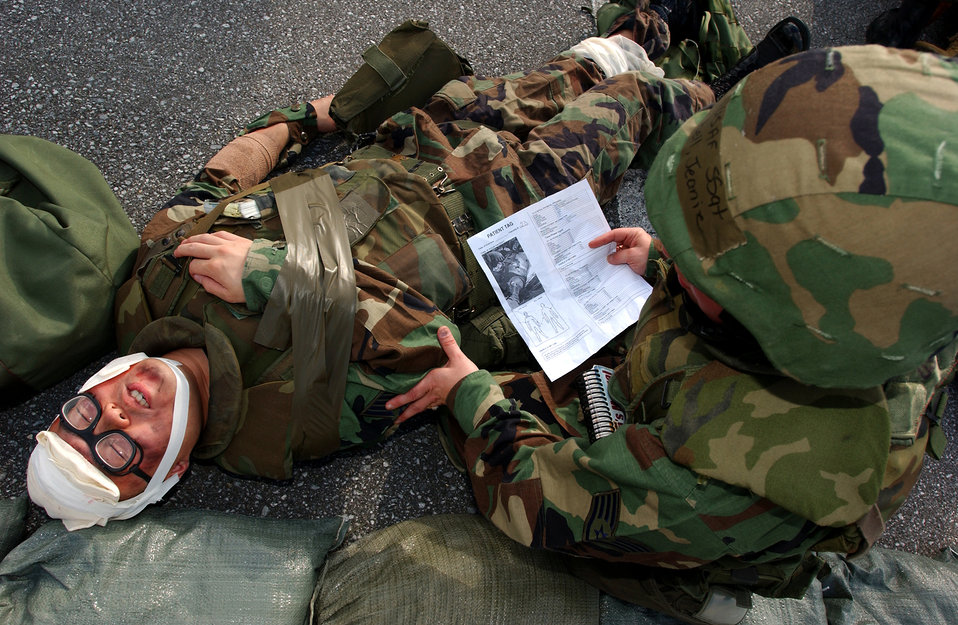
Lifesaving training

Staff Sgt. Jeanie Campbell cares for a simulated injured Airman with multiple wounds and keeps the victim conscious during a simulated explosion at Kadena Air Base, Japan, Oct. 24. The mass casualty scenario helped Airmen train on treating wounds and applying basic life-saving steps during Local Operational Readiness Exercise Beverly High 08-1. Sergeant Campbell is assigned to the 18th Communications Squadron.